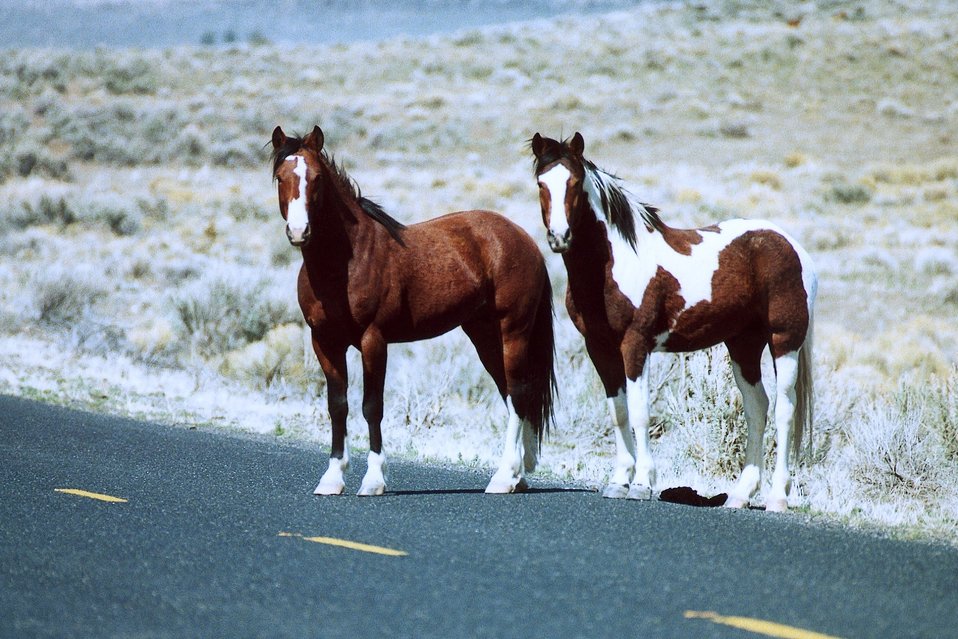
Two wild bachelor stallions crossing Oregon State Road 205.